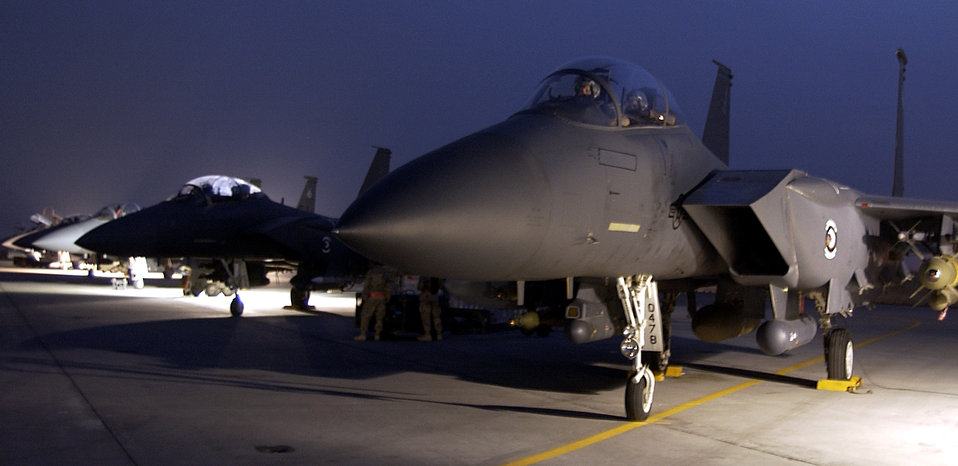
Night missions

OPERATION IRAQI FREEDOM -- F-15E Strike Eagles prepare to leave this forward-deployed air base March 21, 2003, to participate in a night mission. The Strike Eagles from Seymour Johnson Air Force Base, N.C., are flying missions in support of Operation Iraqi Freedom.